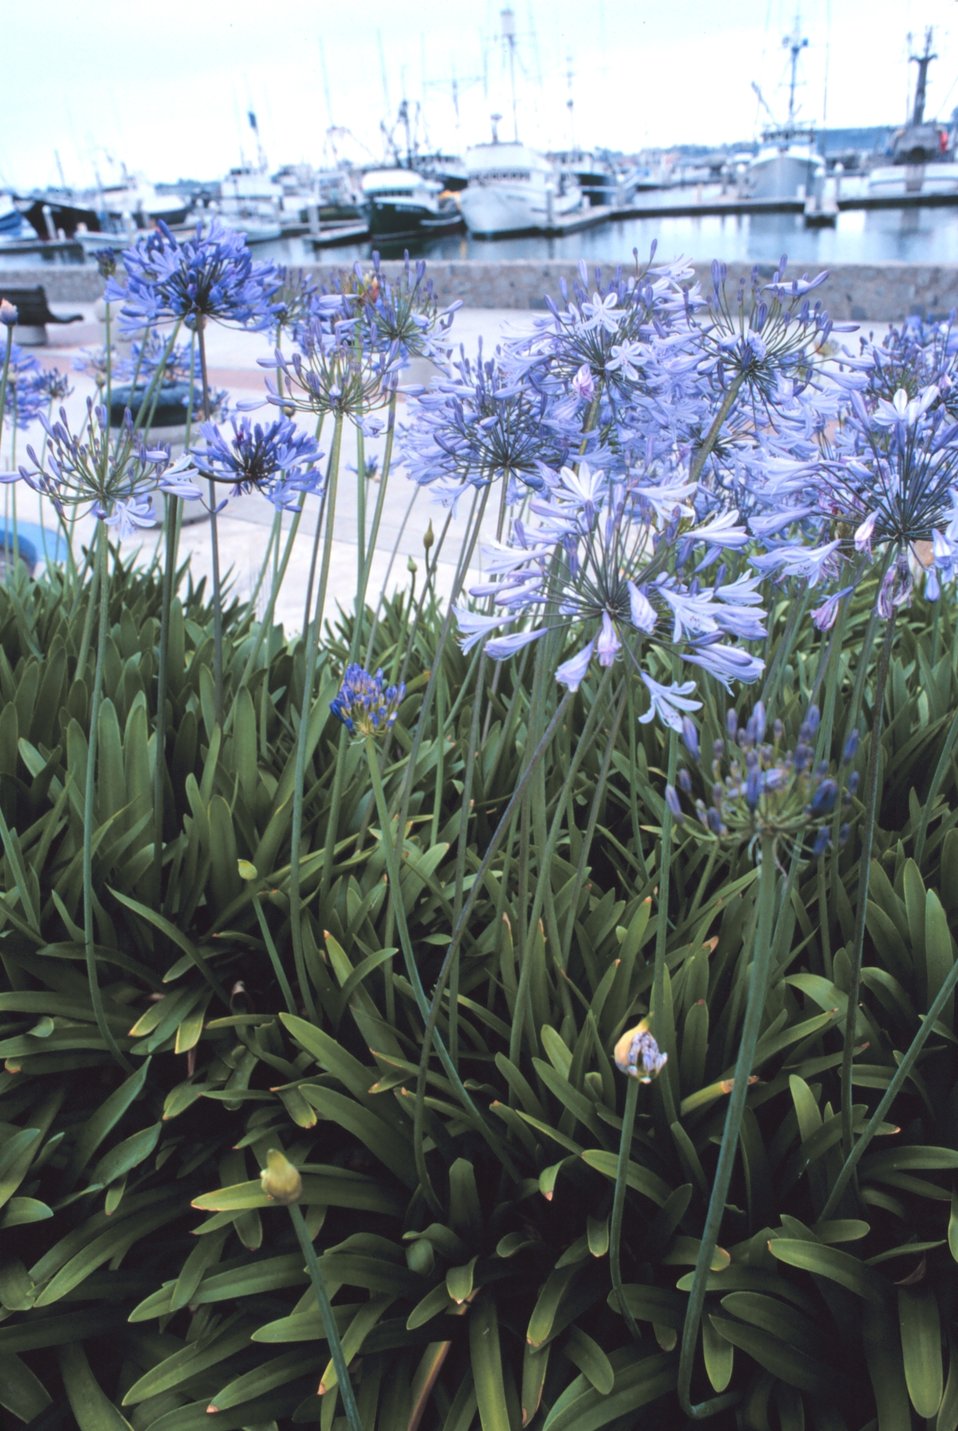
Tuna clippers at Tuna Harbor as seen from Tuna Park